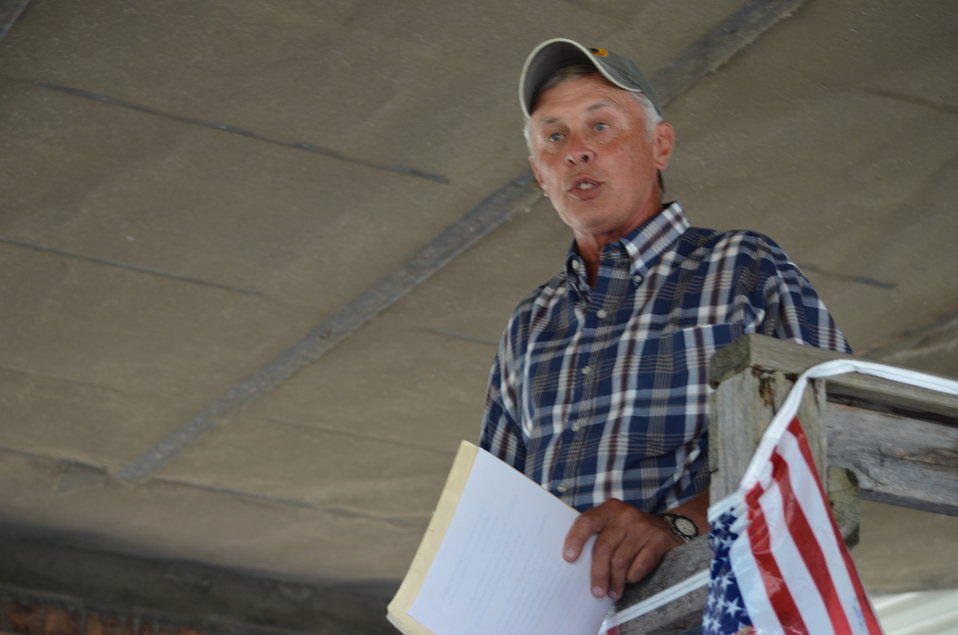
Billy Hildebrand, KFAN radio personality and emcee for 2012 Federal Duck Stamp Home State ceremony.